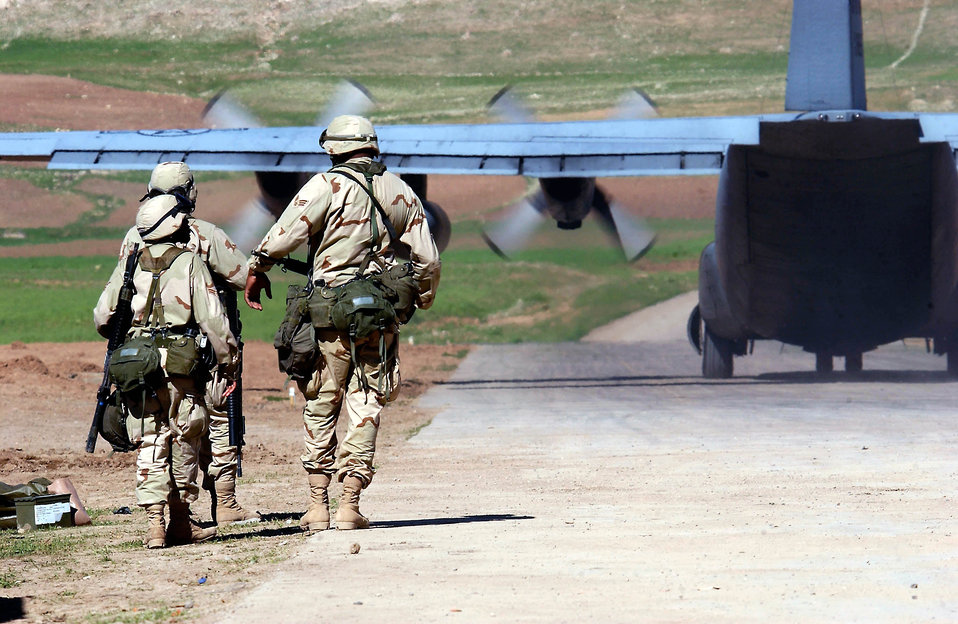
Off the beaten path

OPERATION IRAQI FREEDOM -- Security forces members from the 786th Contingency Response Group veer off the road to avoid the dirt blown up by a C-130 aircraft leaving the airfield located in Northern Iraq.